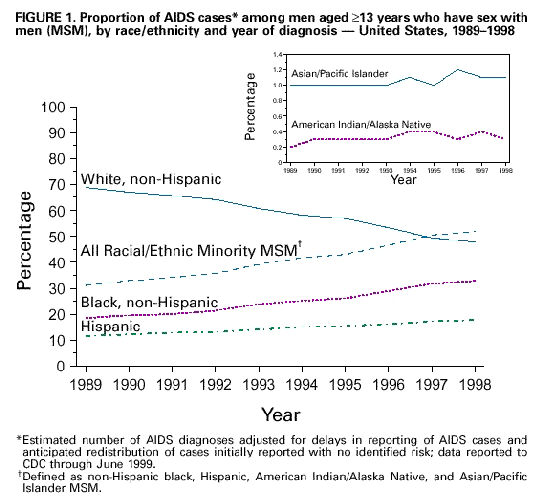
AIDS cases among men who have sex with men, by race/ethnicity and year of diagnosis.